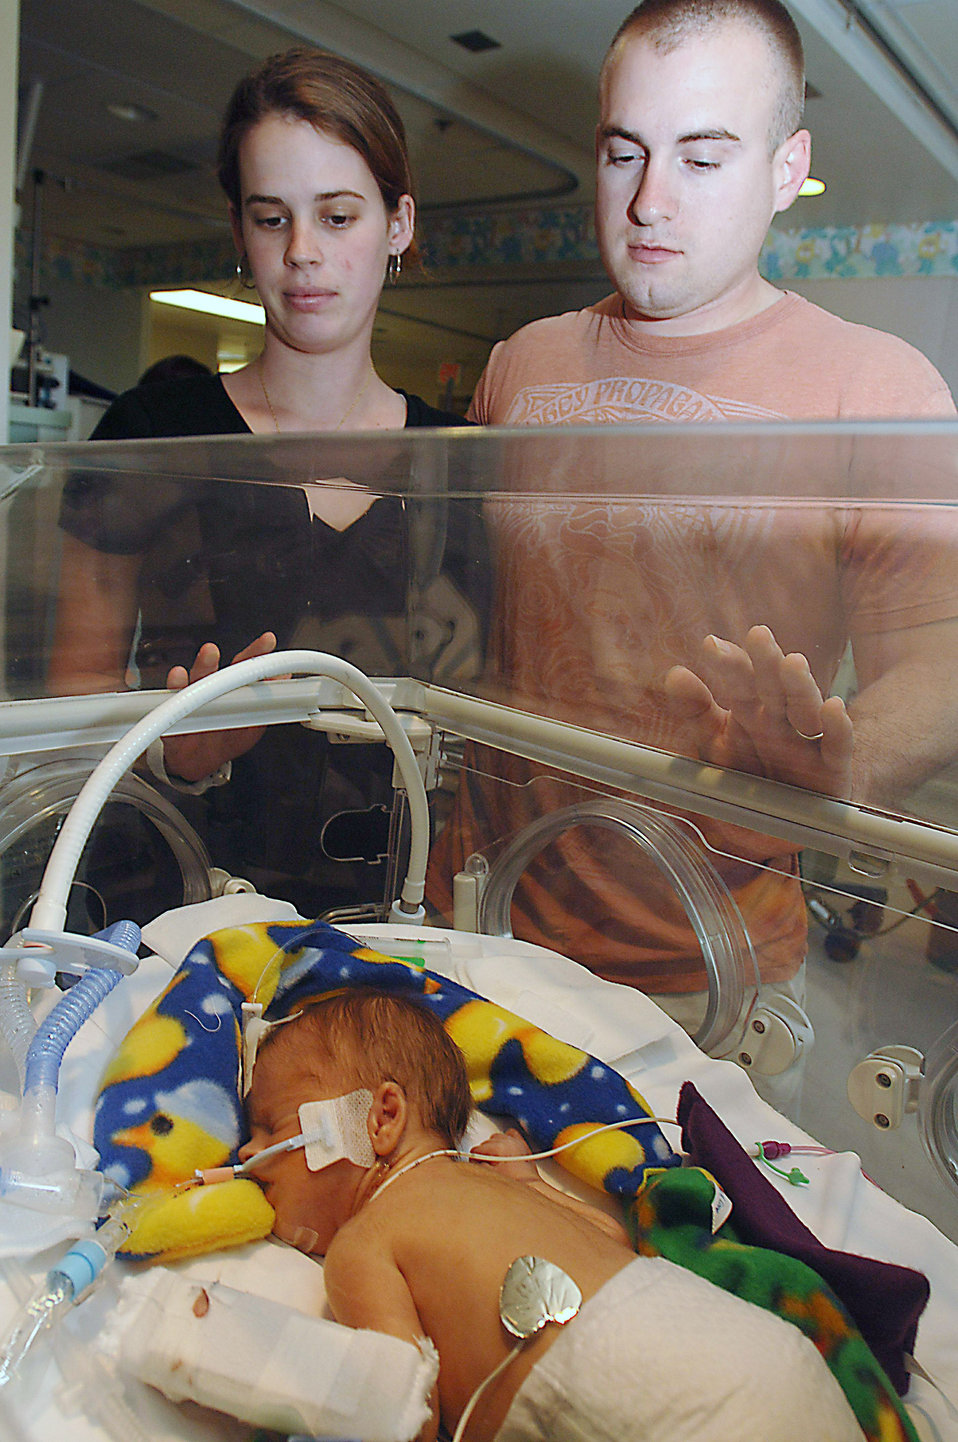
Wilford Hall doctors perform lifesaving procedure on newborn

Army Staff Sgt. Christopher Gardner and his wife, Natascha, visit their newborn son, Alexander, March 11 in the Wilford Hall Medical Center Neonatal Intensive Care Unit at Lackland Air Force Base, Texas. The baby underwent a rare ex-utero intrapartum
treatment, or EXIT, procedure where he was partially delivered and intubated to provide access to his airway which was blocked by a large tumor. Sergeant Gardner is assigned to the assigned to 23rd Armored Calvary Regiment at Fort Hood, Texas.